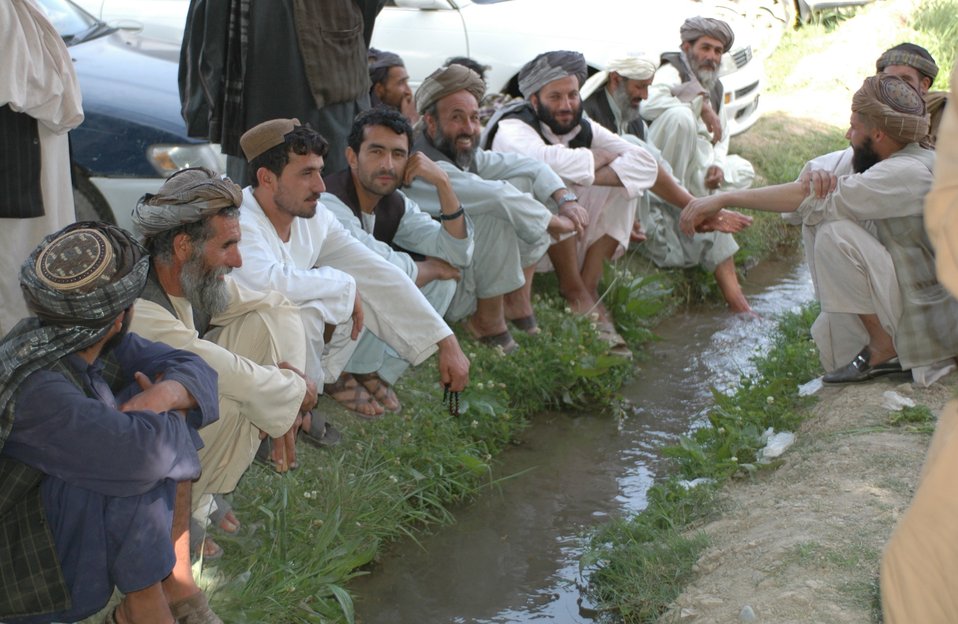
Dr Shah Visits Argandab April 10, 2010